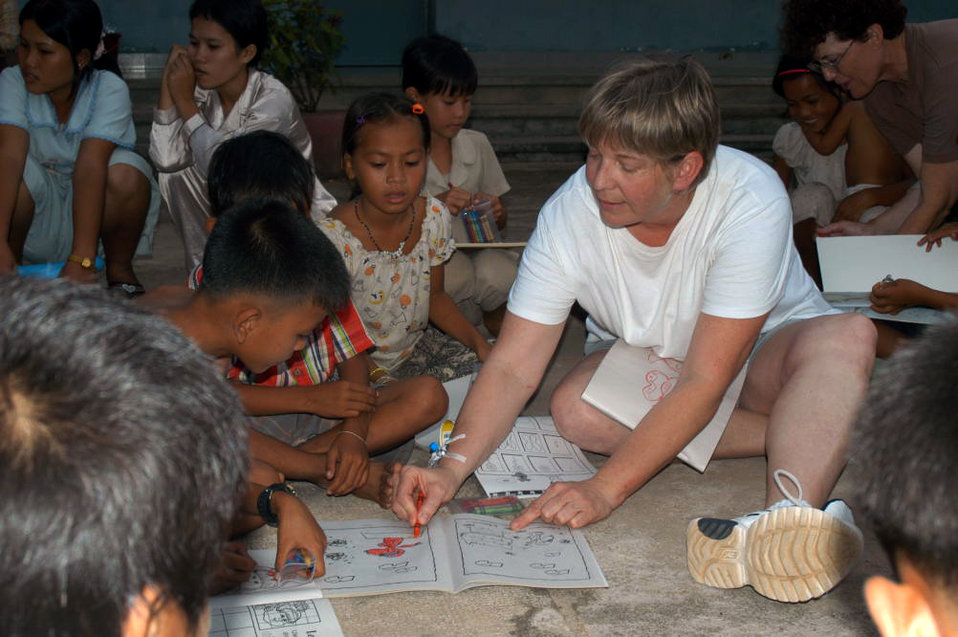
Coloring in Cambodia

KEP, Cambodia -- Master Sgt. Rita Greiner leads a coloring book session with Cambodian children in a hospital compound here May 21. Sergeant Greiner is an orthopedics technician and is part of a 20-person blast resuscitation and victim assistance team. She is assigned to the 99th Medical Operations Squadron at Nellis Air Force Base, Nev.